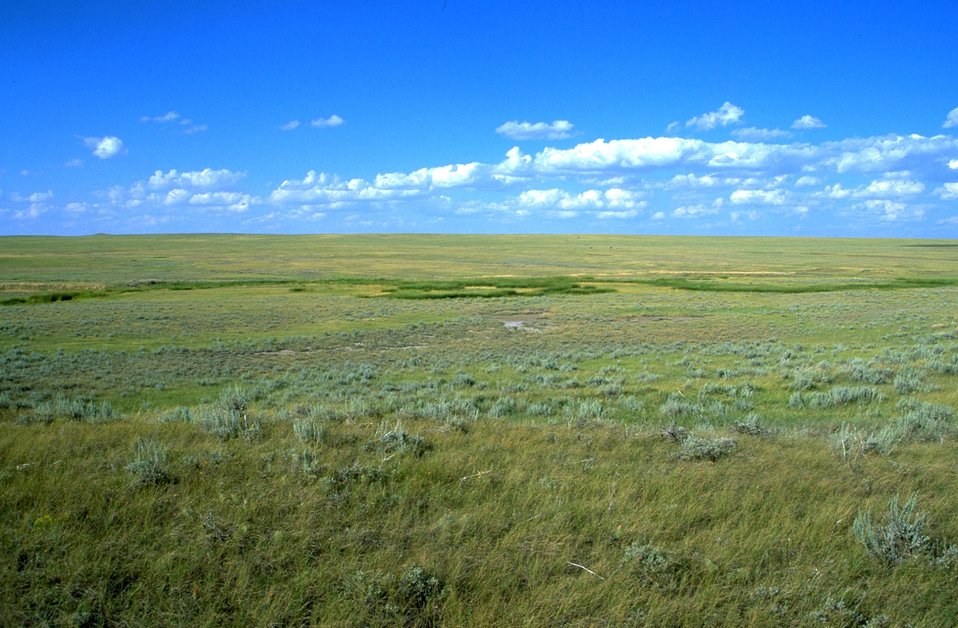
Praire Cordgrass riparian Battle Creek